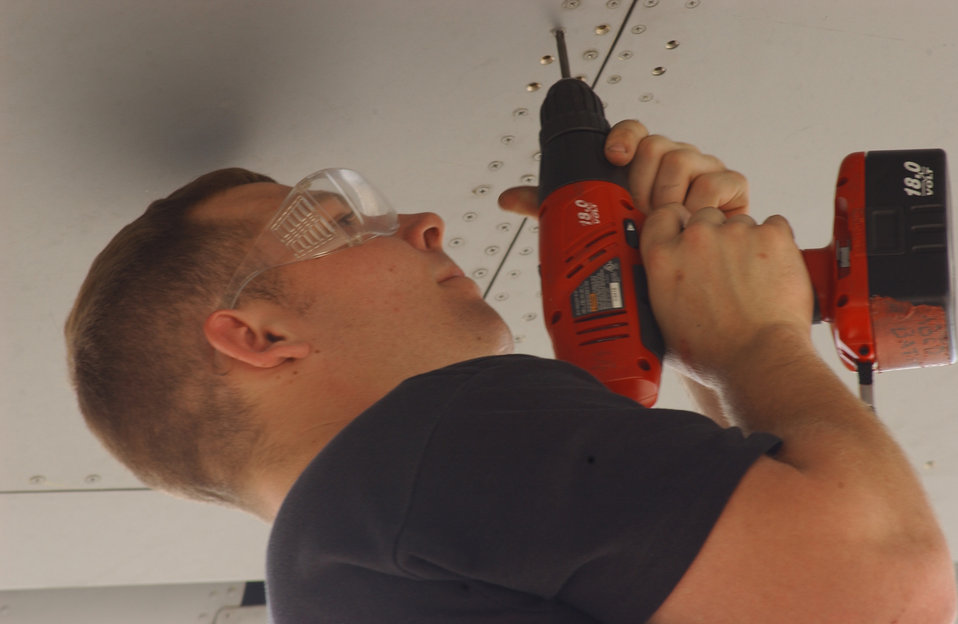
Drilling the tanker

KADENA AIR BASE, Japan -- Staff Sgt. Christopher Needes reinstalls panels on a KC-135 Stratotanker here May 21. Sergeant Needs is a crew chief with the 718th Aircraft Maintenance Squadron.